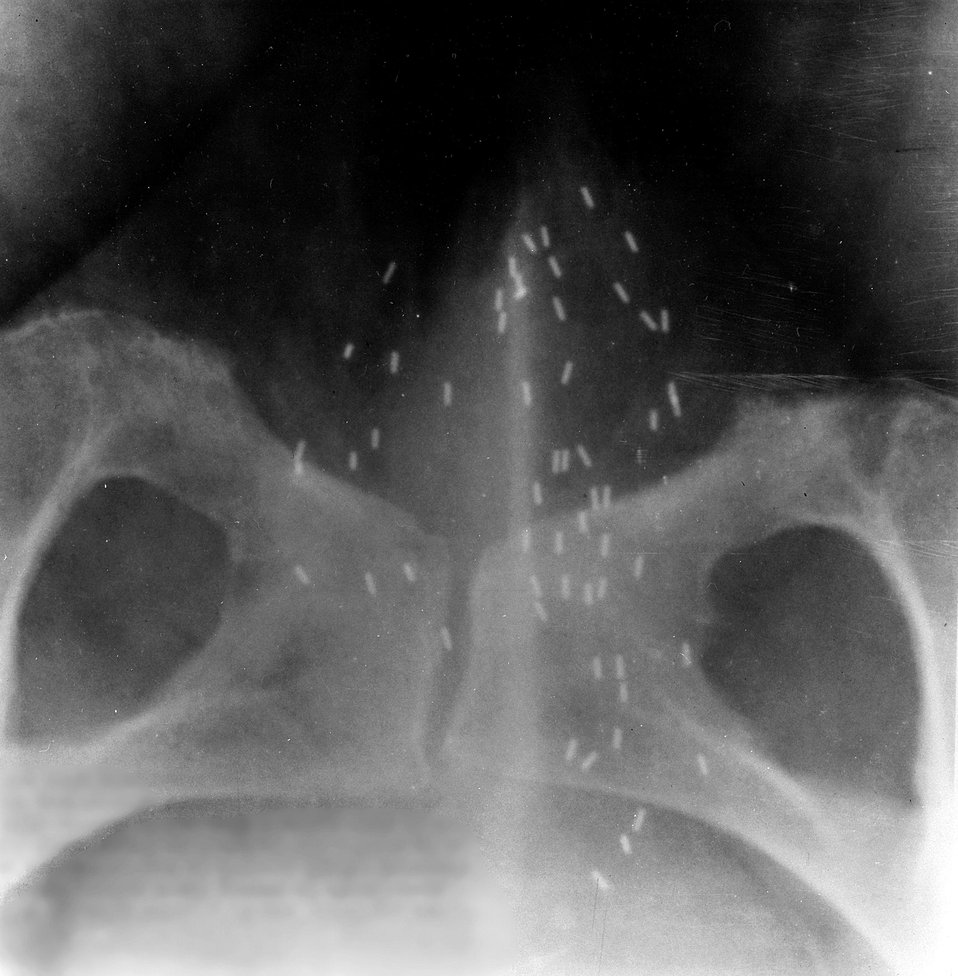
Photo shows and x-ray of the pelvis of a patient with cancer of the anus showing implanted 'seeds' of radioactive chromium wire which can be left in the body permanently.
c.1968